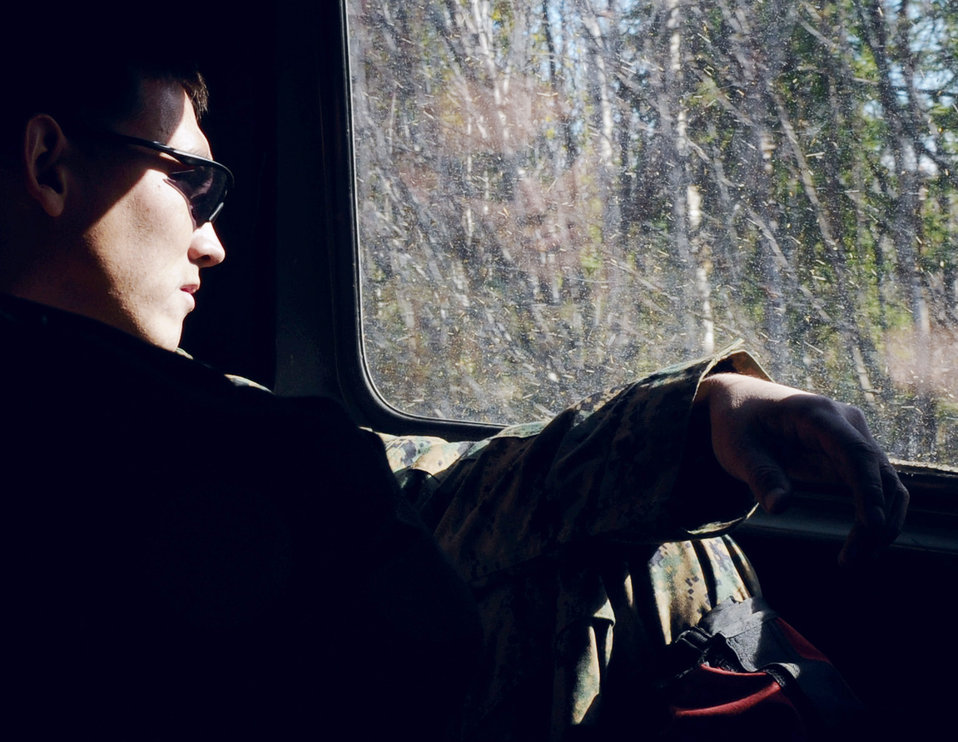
Servicemembers clear Alaskan bombing range

Marine Sgt. Ray Conard looks out the window May 14 at the Pacific Alaskan Range Complex. Marines are training with Airmen to provide enough manning to safely practice clearing the range of live munitions left over from Red Flag training operations. Sergeant Conard is with the 1st Explosive Ordnance Disposal, Camp Pendleton, Calif.